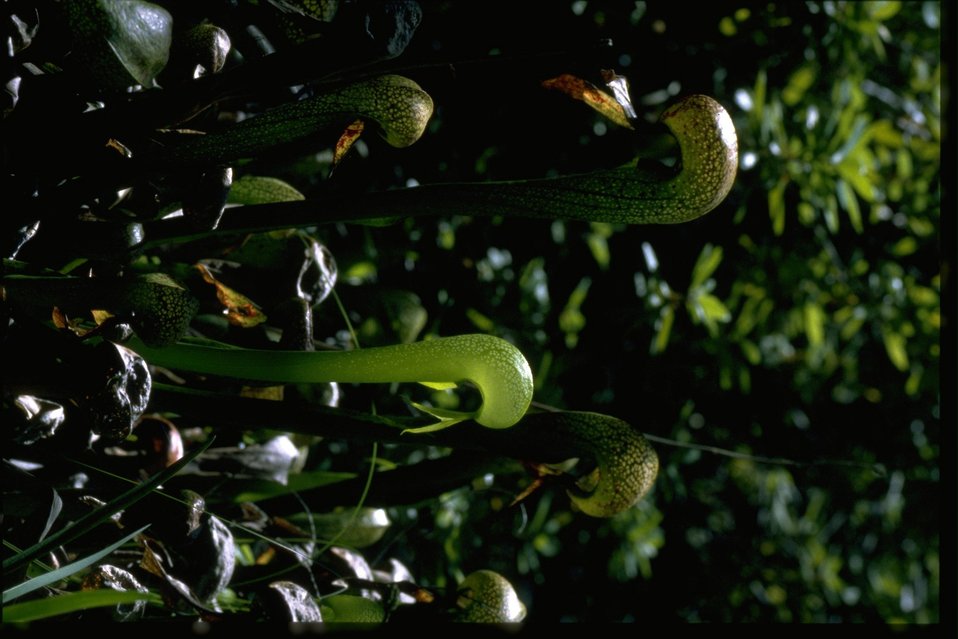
Medium shot of Cobra Lily, Darlingtonia californica.